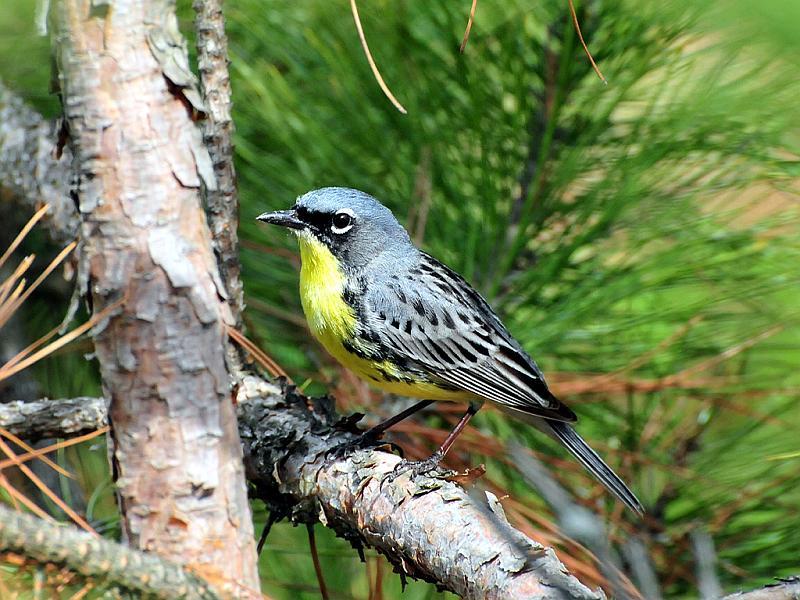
The Kirtland’s warbler nests in jack pine forests in a few areas in Michigan and Wisconsin. Kirtland's warbler populations have greatly improved following multi-agency efforts to restore jack pine forests and prevent parasitism of Kirtland’s warbler nests by brown-headed cowbirds.